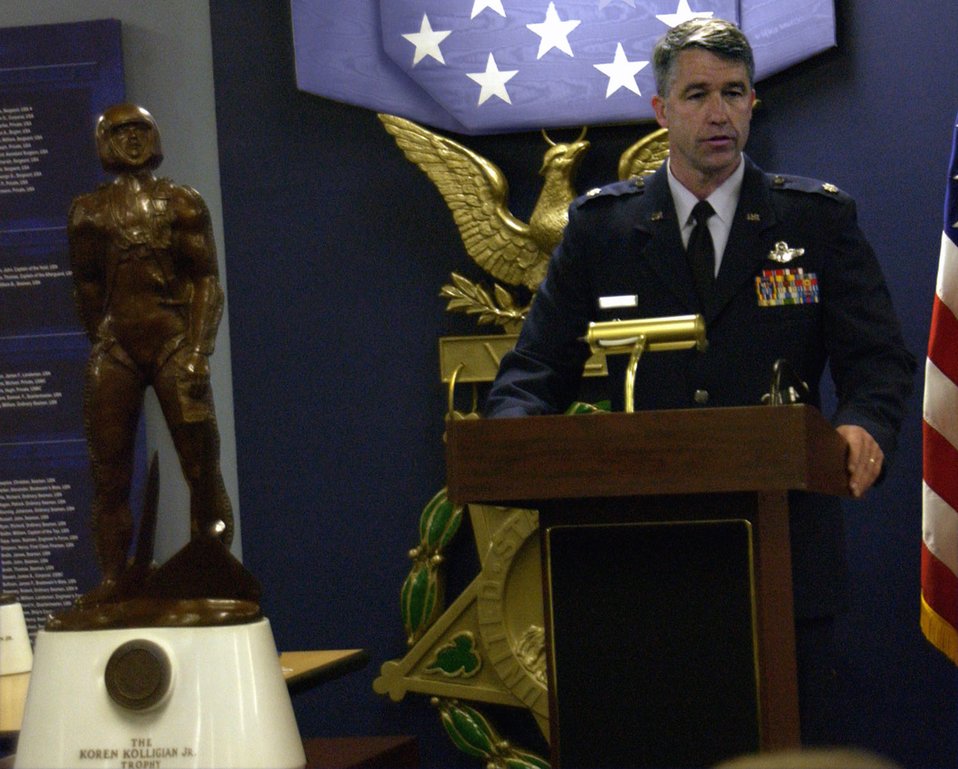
F-16 pilot earns Koren Kolligian Jr. Trophy

Lt. Col. Peter Byrne thanks his family, friends and coworkers during a ceremony June 5 at the Pentagon's Hall of Heroes. He was awarded the Koren Kolligian Jr. Trophy, which stands in the foreground. Colonel Byrne, the 140th Wing vice commander, earned the award from an incident in June 2006 when he suffered a stroke while flying an F-16 but was able to safely land the plane 90 minutes later.